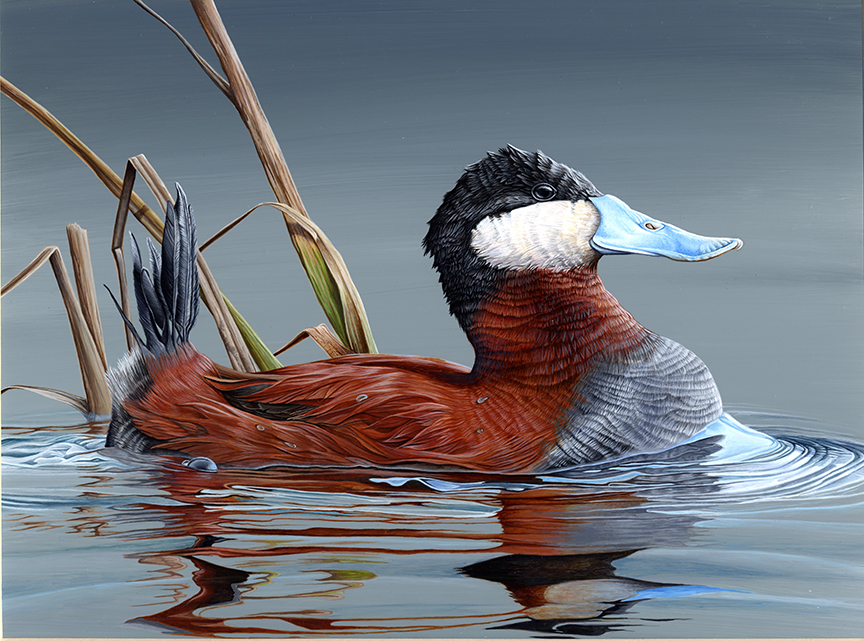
JRDuck2013FL

2013 Junior Duck Stamp Best of Show-Florida